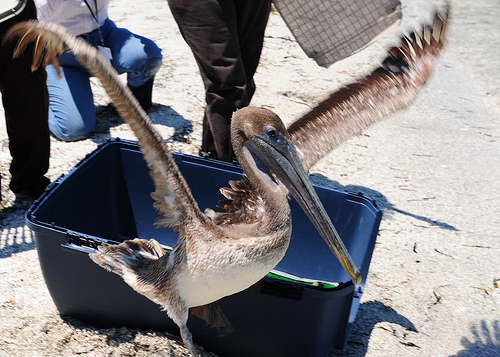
Brown Pelican Released by USFWS

ST. PETERSBURG, Fla. -- A Brown Pelican is released at the Egmont Key National Wildlife Refuge near St. Petersburg May 30, 2010.